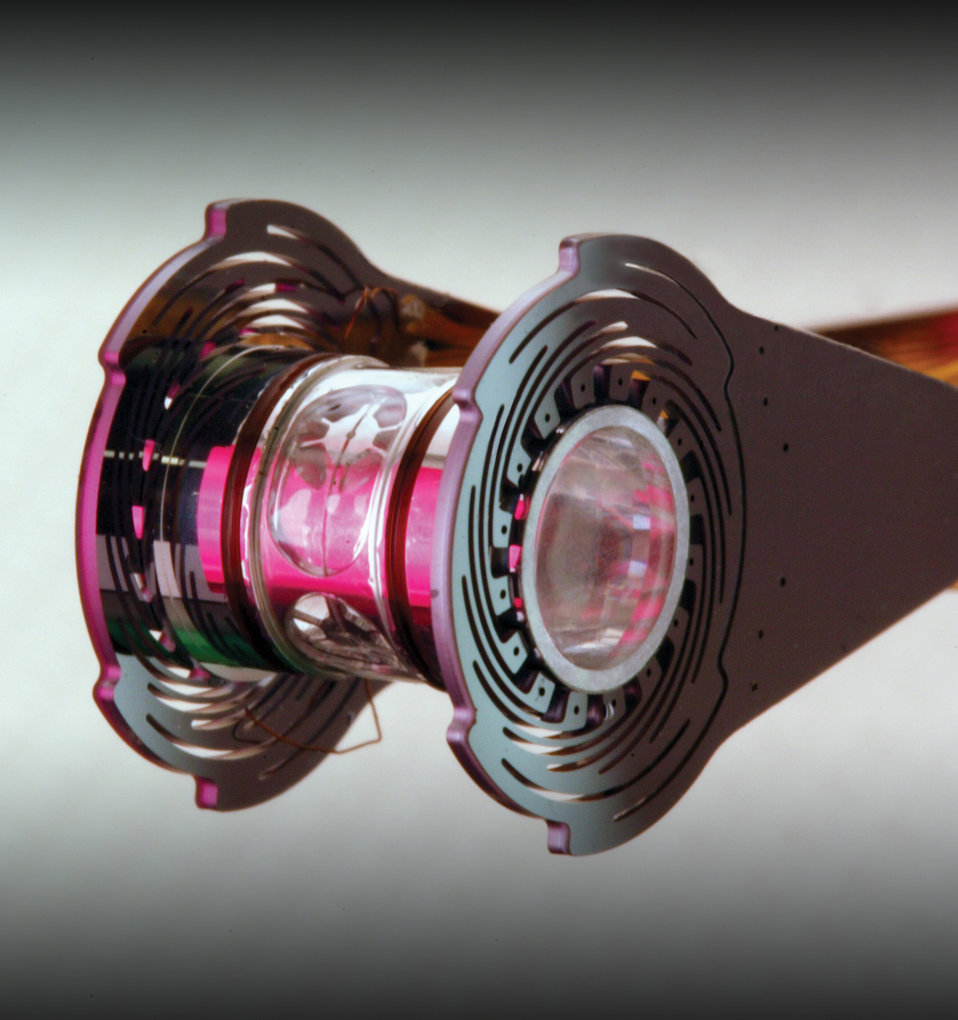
At the National Ignition Facility at LLNL, fully assembled target for laser ignition experiments incorporates a tented capsule, Hohlraum, thermal -mechanical package, and silicone cooling arms.